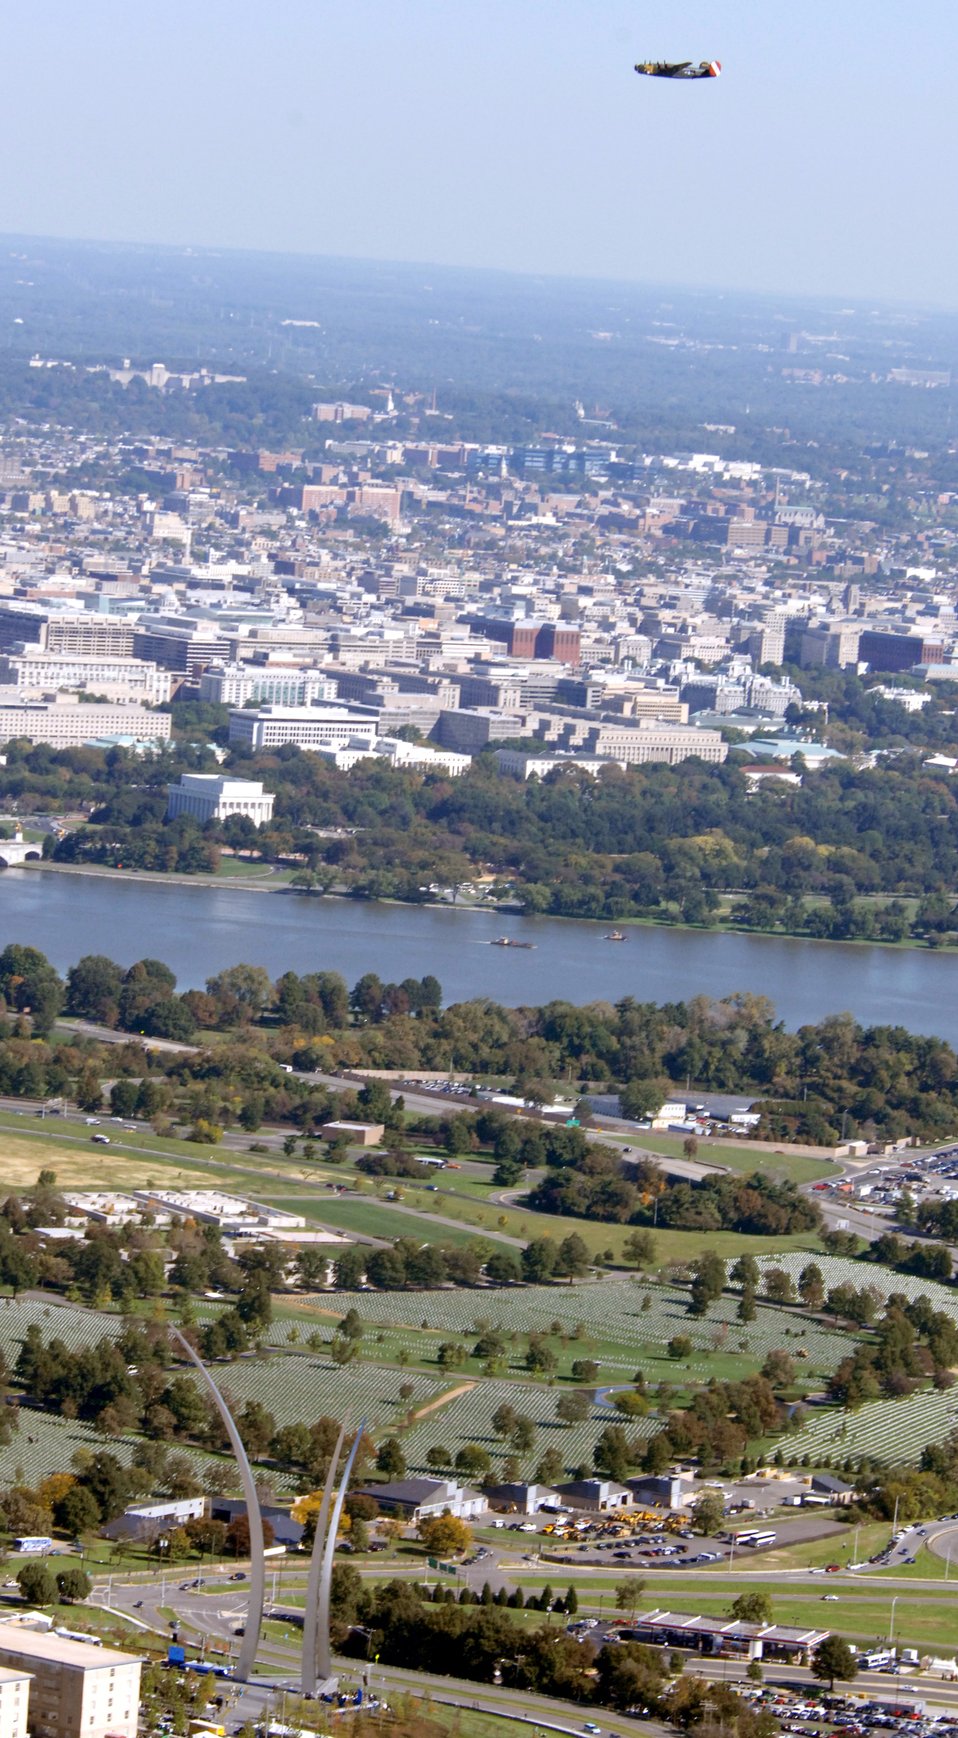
AF Memorial: Warming up for the big show

A B-24 Liberator flies over the Air Force Memorial during a practice flight over the memorial Oct. 13 in Arlington, Va. The dedication ceremony will be held Oct. 14. An Air Force open house will be held near the Pentagon in conjunction with the dedication ceremony that will feature performances by the U.S. Air Force Band, the U.S. Air Force Honor Guard drill team, and a concert by country music performer LeeAnn Womack.